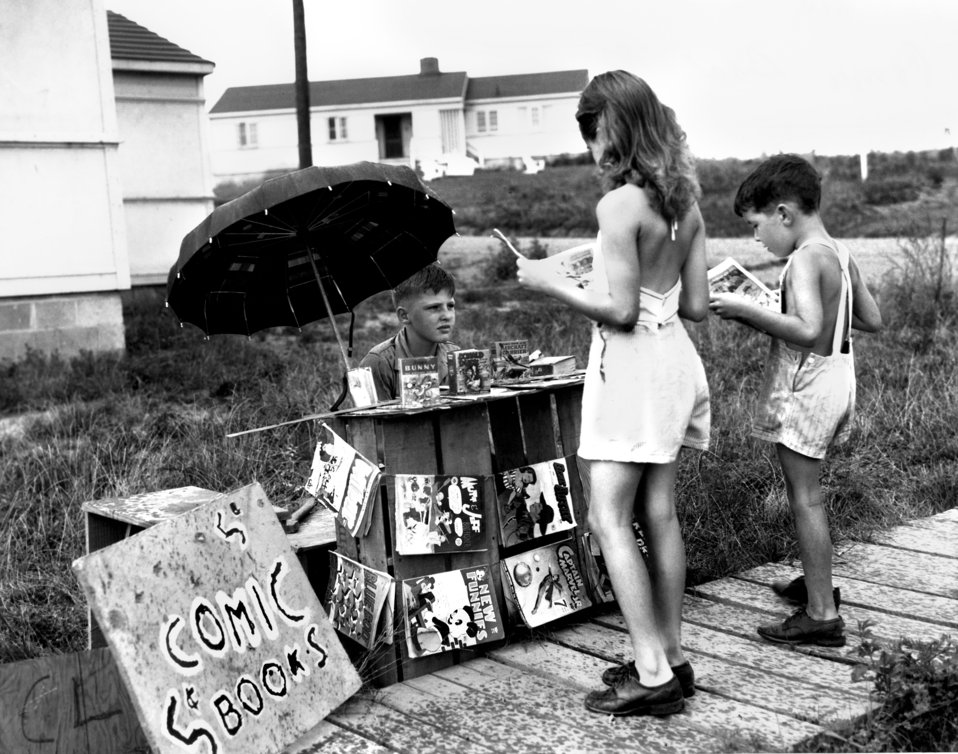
Comic Book Stand Oak Ridge 1945

Pro888 DOE photo Ed Westcott 8-1945 Oak Ridge Tennessee